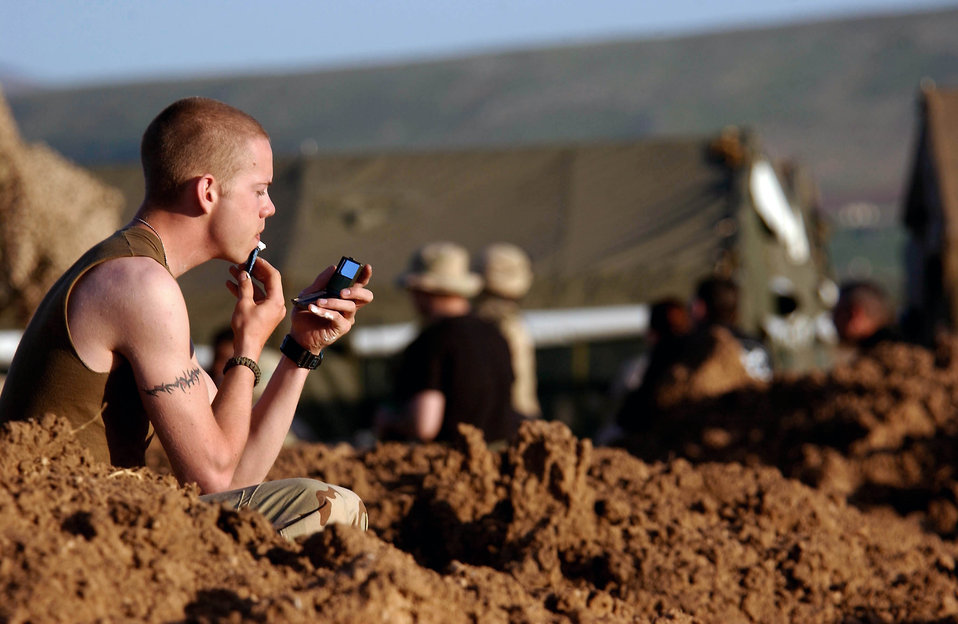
I need a shave

OPERATION IRAQI FREEDOM -- In field conditions, Airman 1st Class Brandon Cox finds a spot in the dirt and gets a needed shave before returning to patrol duty. Deployed to northern Iraq in support of Operation Iraq Freedom, Cox is one of several Security Forces members at the site providing security for DOD personnel and transient aircraft.